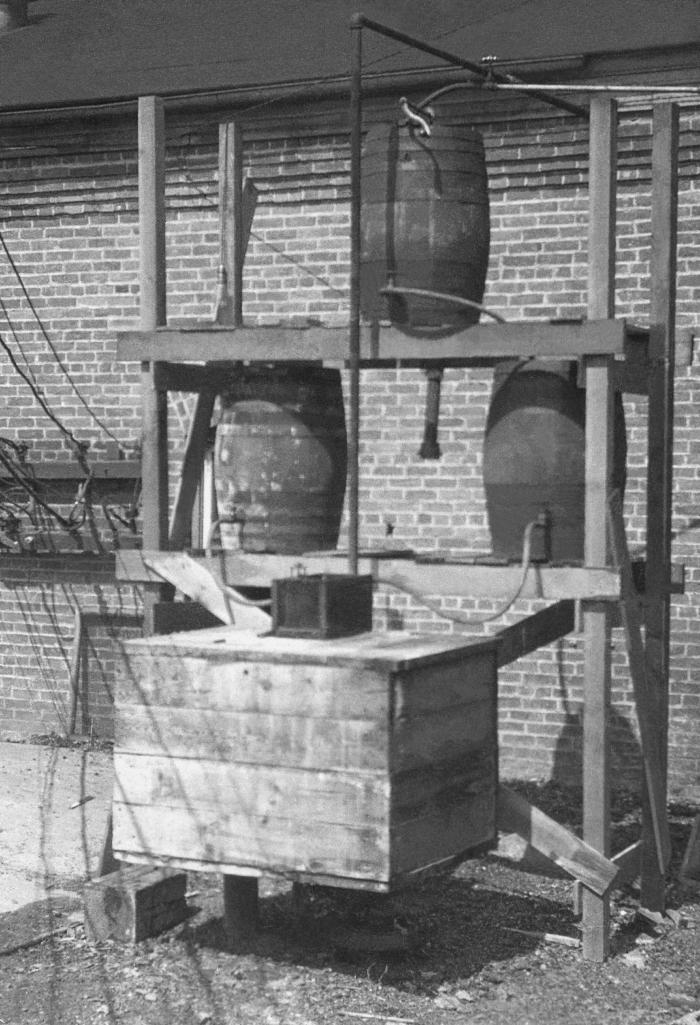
This historic photograph depicted a portable emergency hypochlorite device that in this case, had been used to stop a 1914 epidemic of typhoid fever in Benson, Minnesota. Its purpose was to purify water contaminated with the pathogenic bacteria, Salmonella typhi. It was one of a series of instructional photos used by the Minnesota Board of Health to train public health workers.